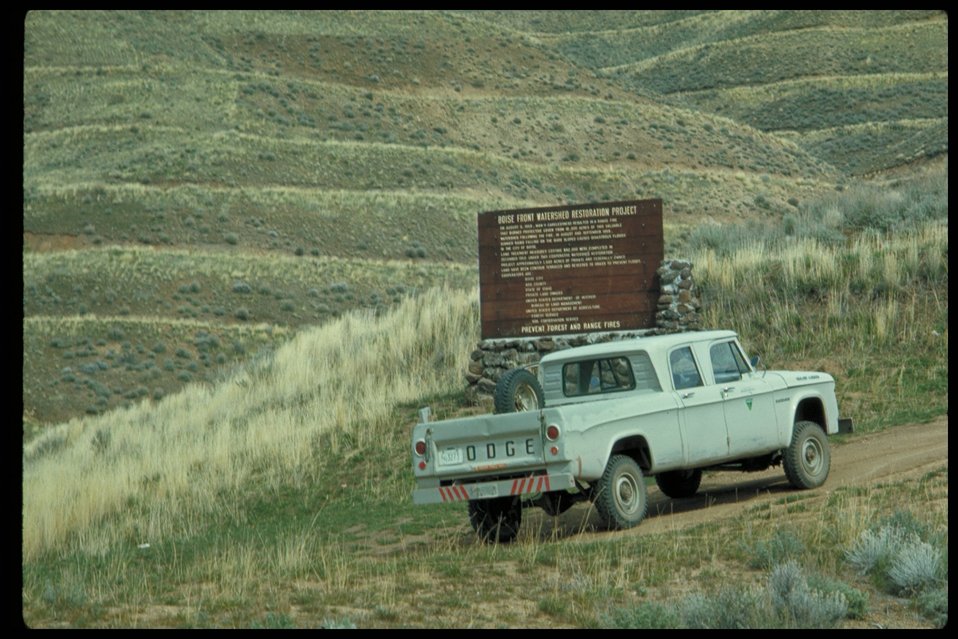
Sign at contour Boise Front OHV Off Highway Vehicles Four Rivers Field Office LSRD Lower Snake River District